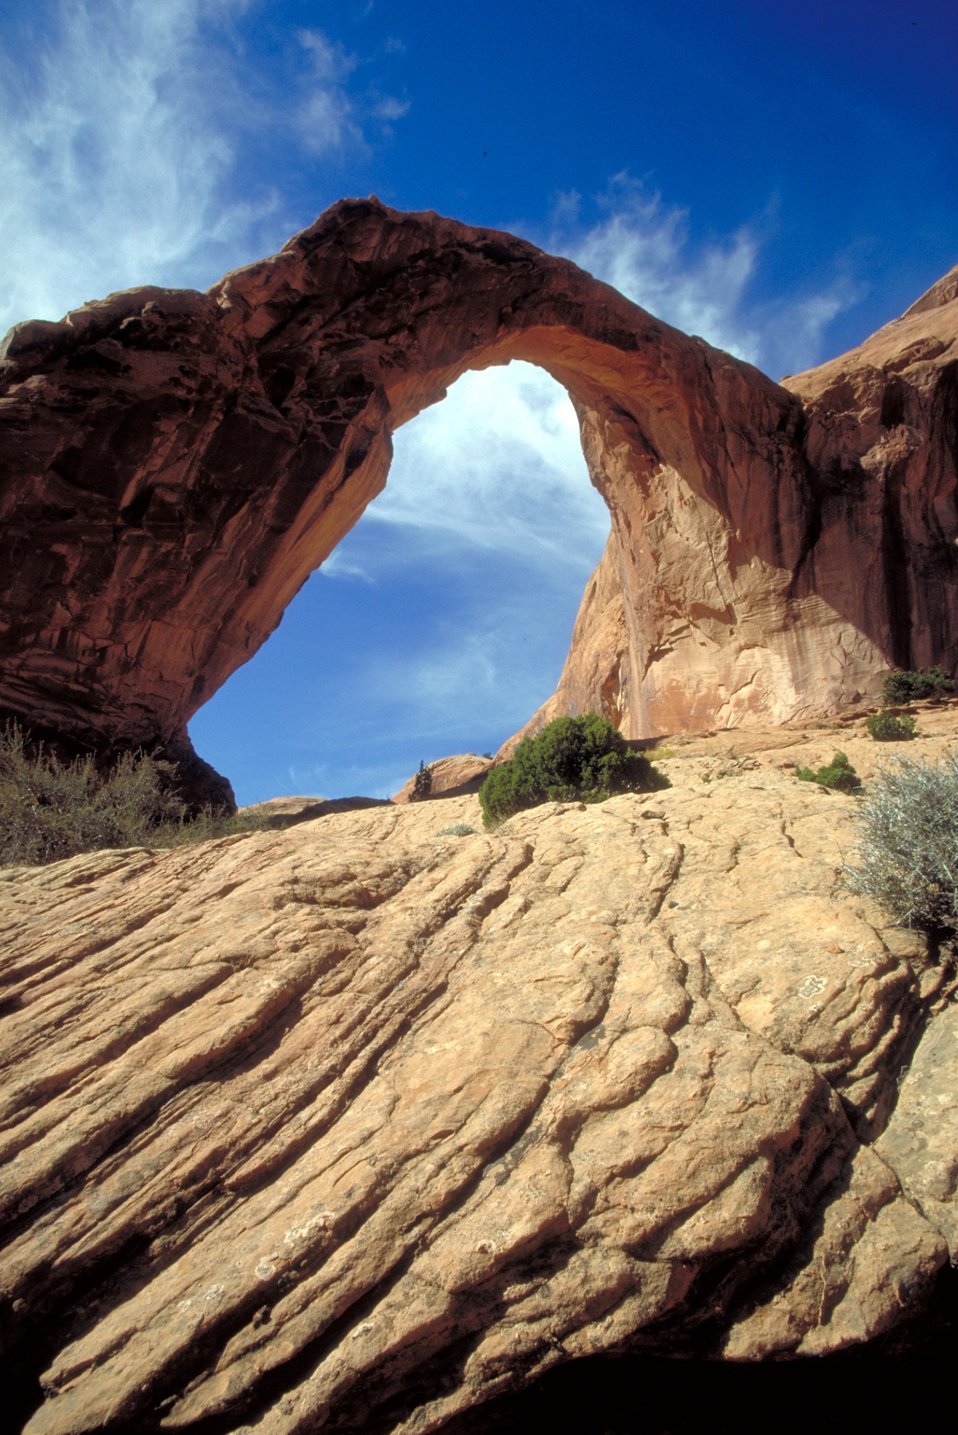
Corona Arch near Moab, Utah.